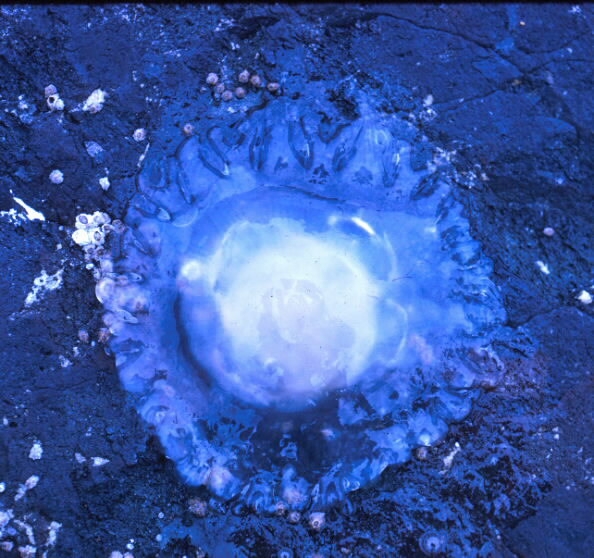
Jellyfish in Aleutians, Alaska Maritime NWR

A jellyfish off Fox Islands in the eastern Aleutian Islands of the Alaska Maritime National Wildlife Refuge has a luminescent glow. (USFWS)